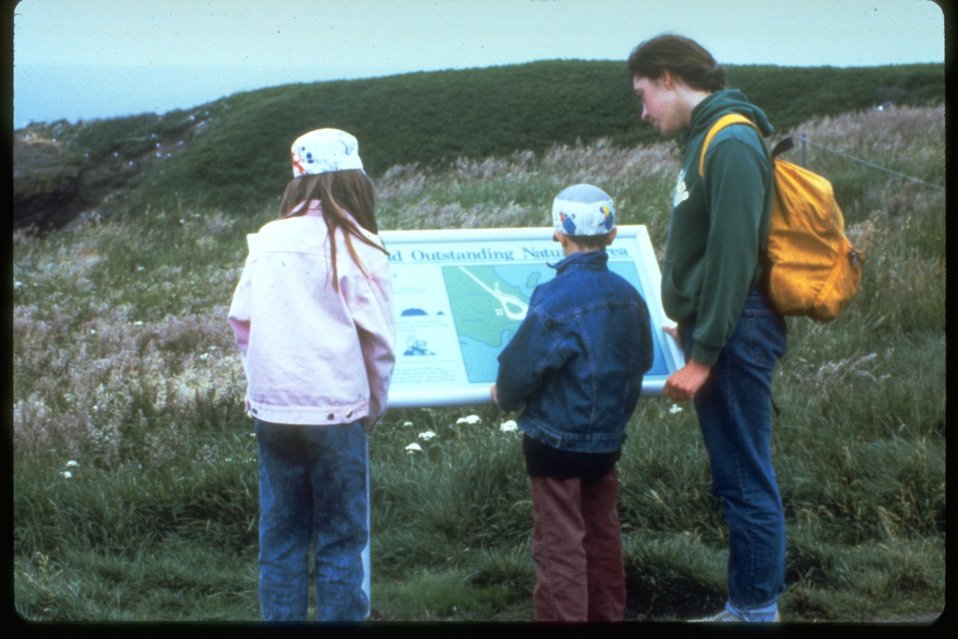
Yaquina Head interpretive sign.